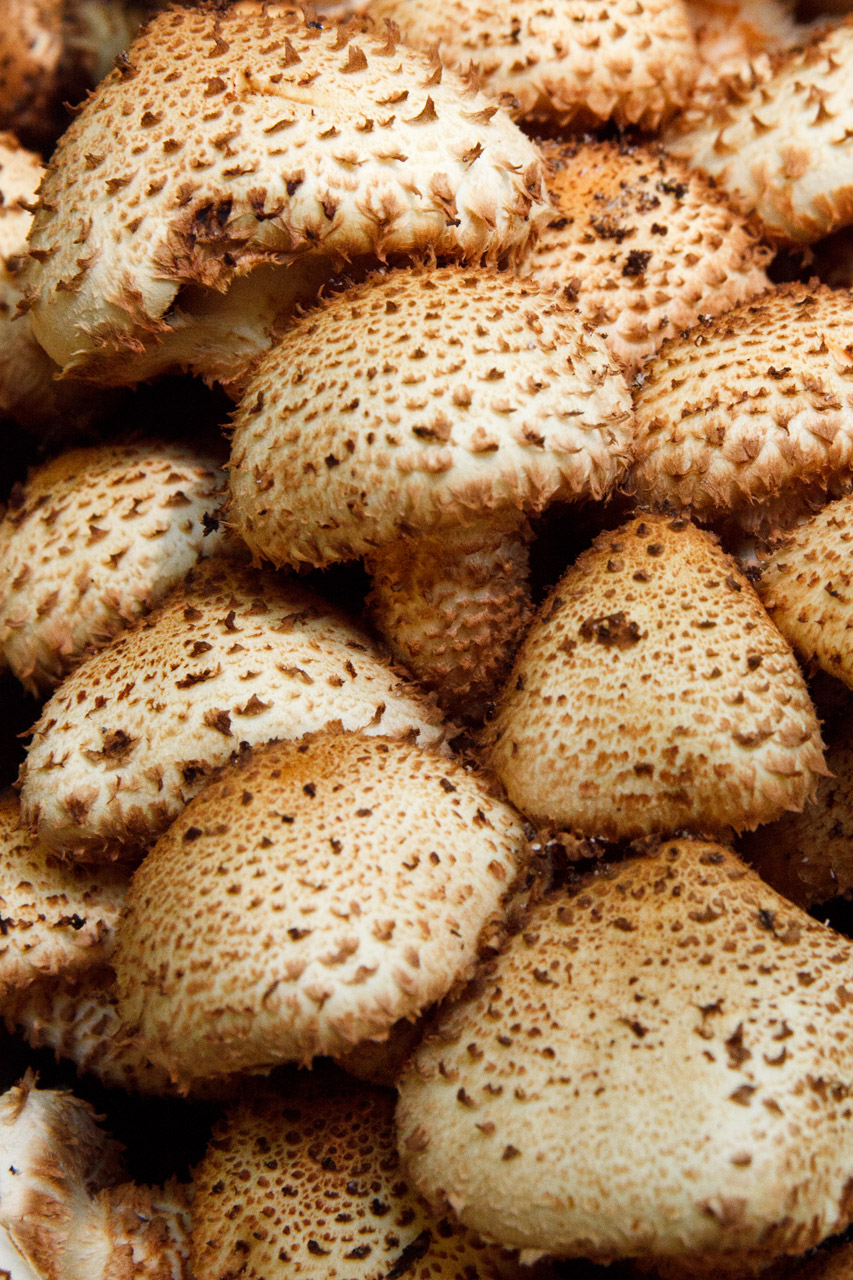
Mushroom texture

Pholiota squarrosa mushrooms texture.